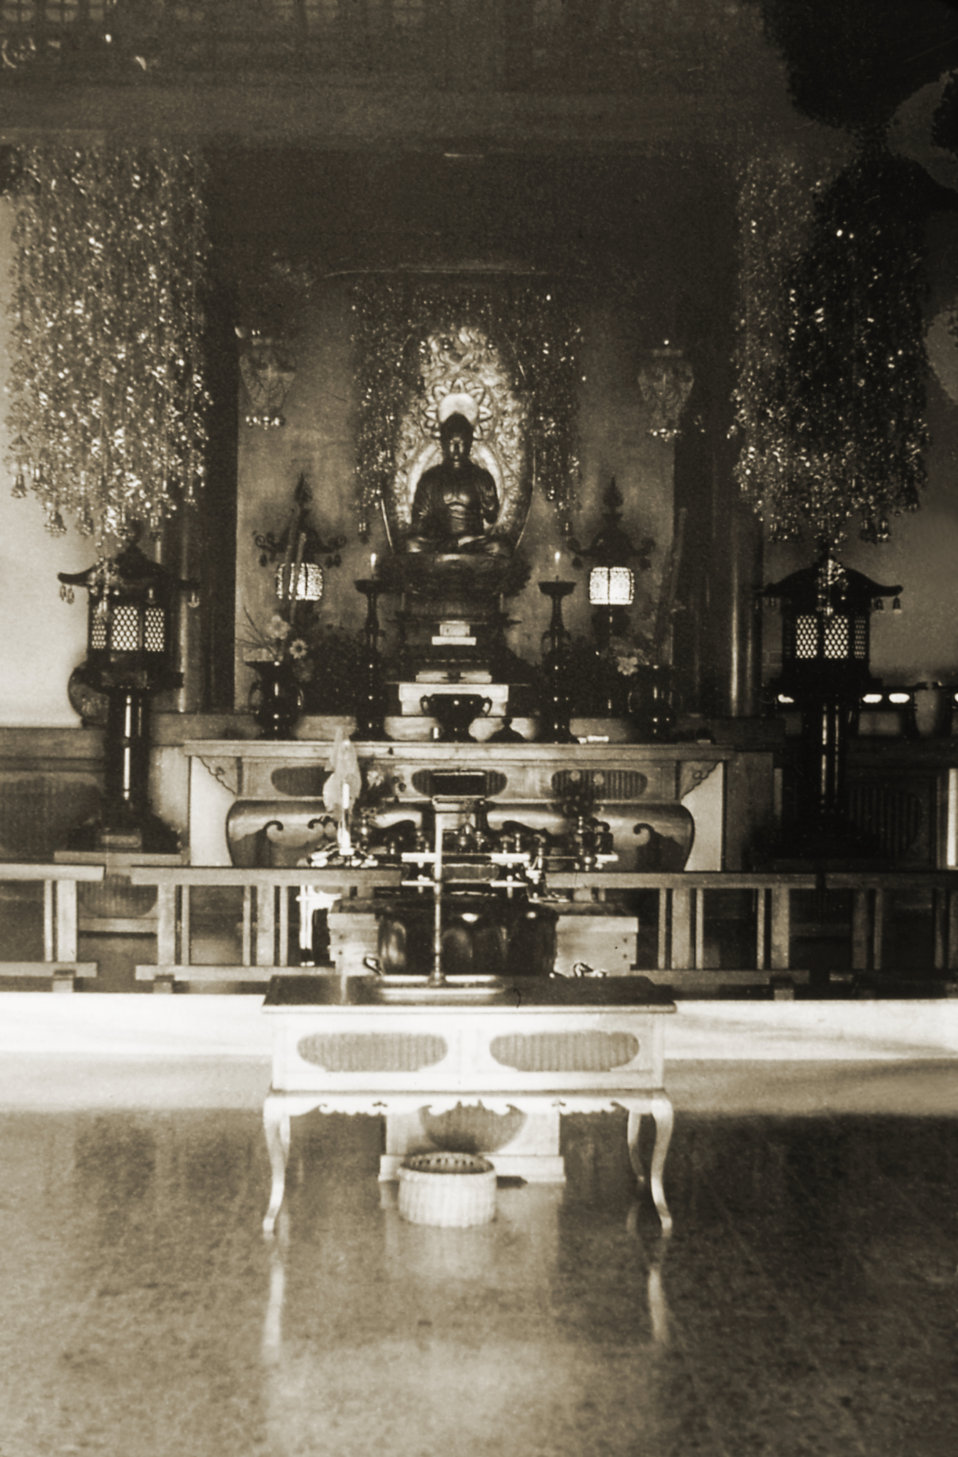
This image depicts the interior of a Japanese Buddhist temple, which was located in Bodh Gaya, a revered religious site located in the Gaya district in the Indian state of Bihar. It is said to be the site, whereupon, Gautama Buddha obtained Enlightenment, or Bodhimandala.